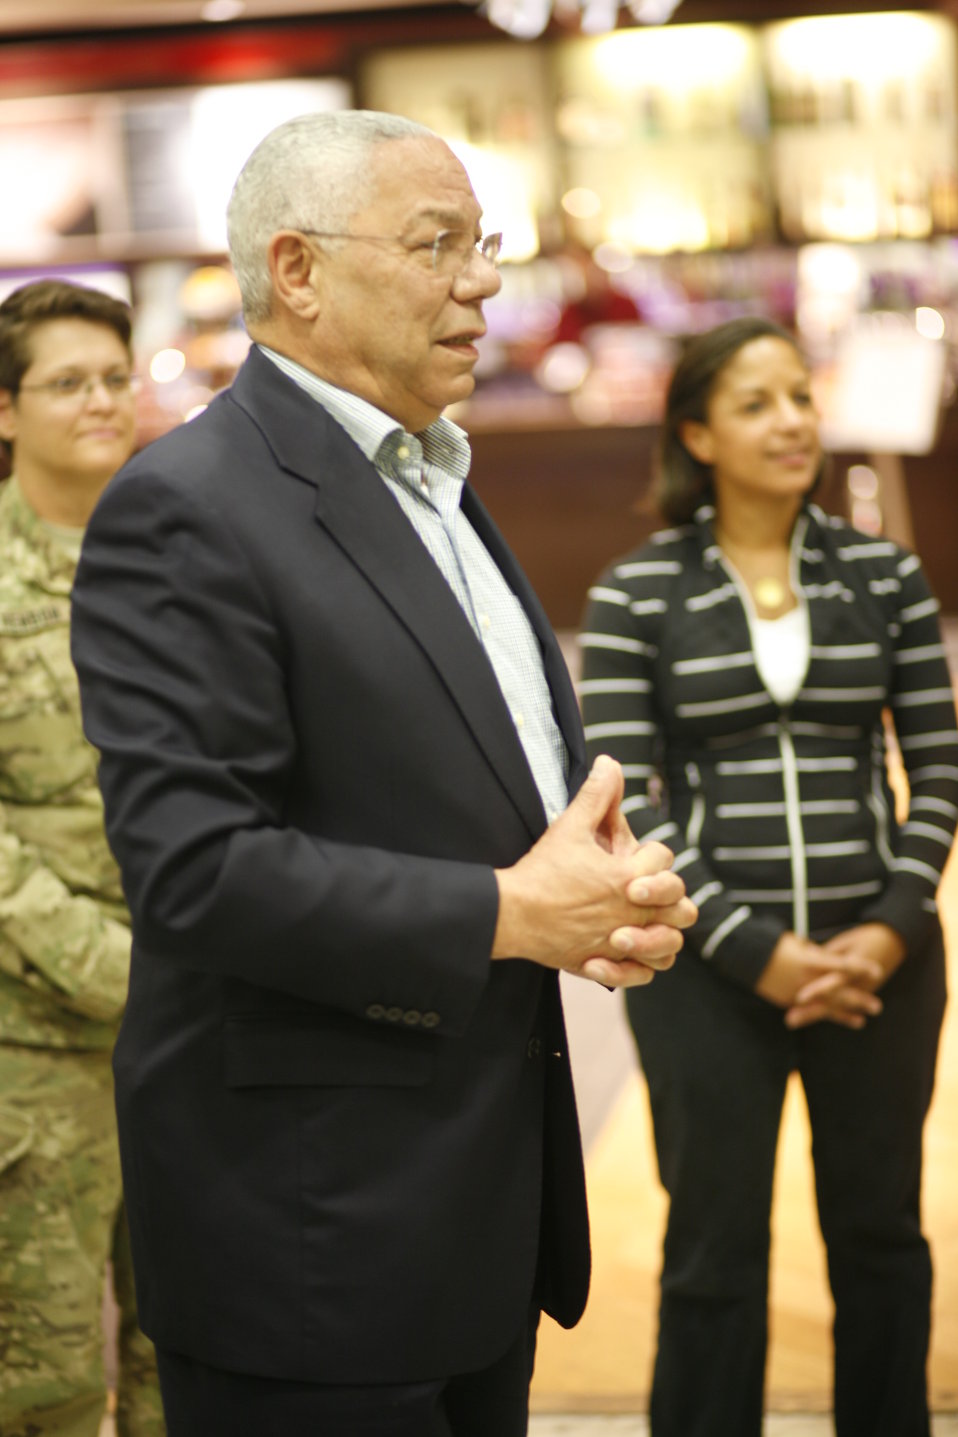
Former Secretary Powell and Ambassador Rice Greet Servicemembers

Former Secretary of State Colin Powell and U.S. Permanent Representative to the United Nations, Ambassador Susan Rice, of the U.S. Presidential Delegation, greet servicemembers returning from Afghanistan at Shannon Airport in Ireland on July 7, 2011.